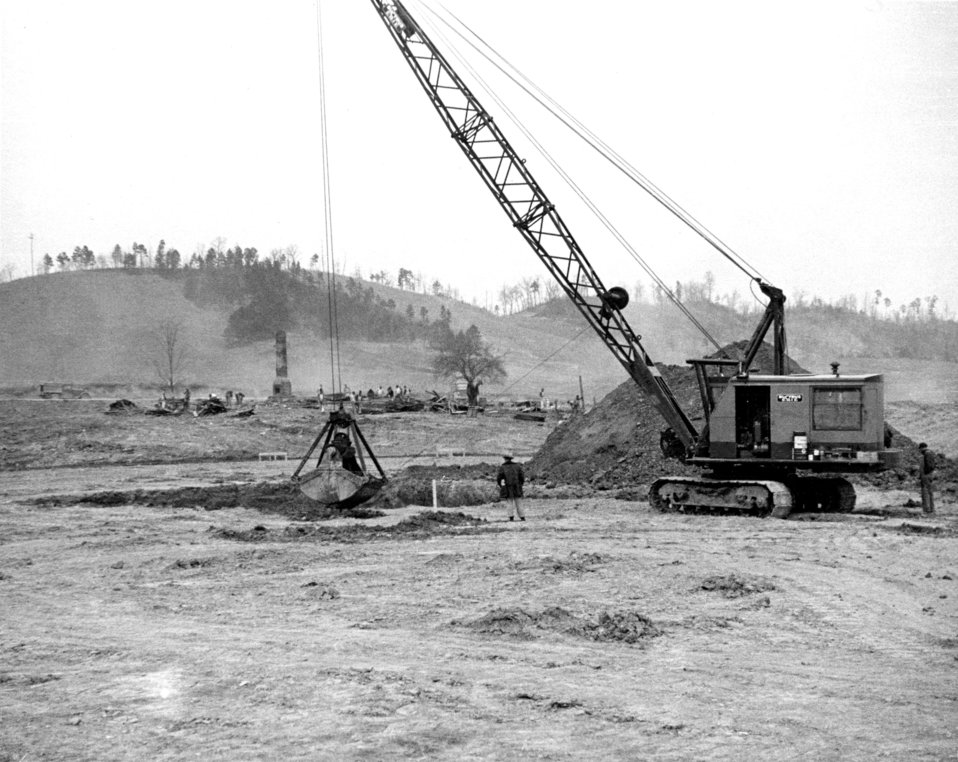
Land Clearing and Foundation Constrruction Y-12 Plant Oak Ridge 1943

Y-12-8-27 DOE photo Ed Westcott 3-2-1943